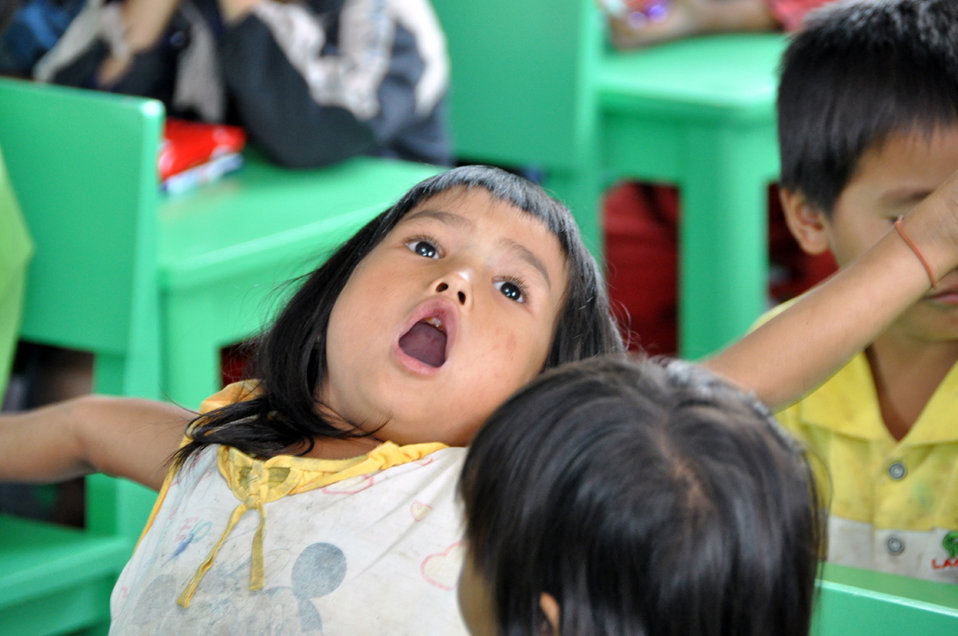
USAID contributes to refurbished pre-schools and teacher training in Vietnam